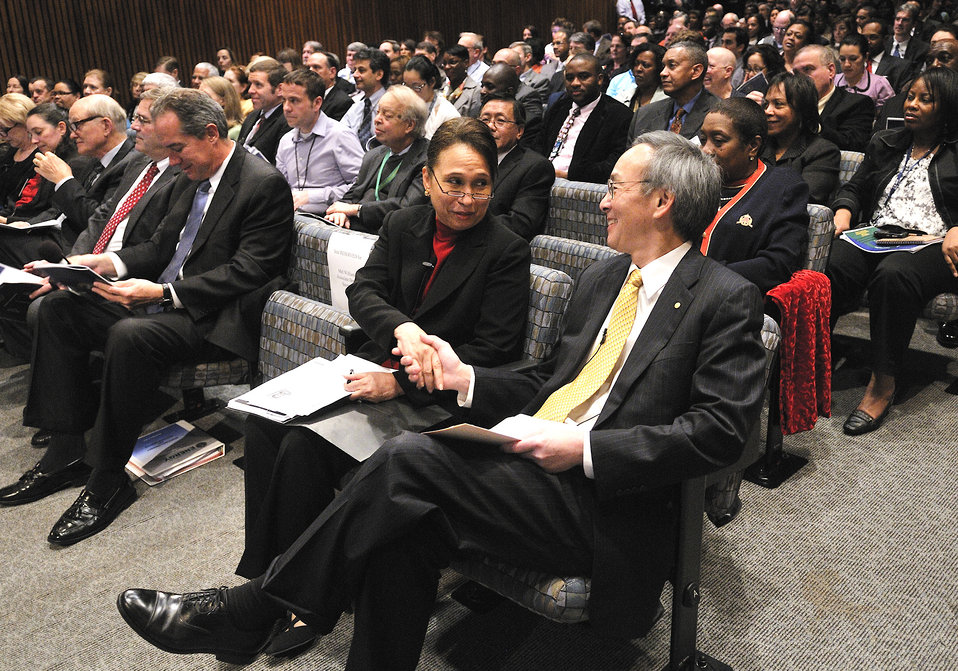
Former Secretary of Labor Alexis Herman chats with Secretary Chu before the start of the Diversity and Inclusion Town Hall.